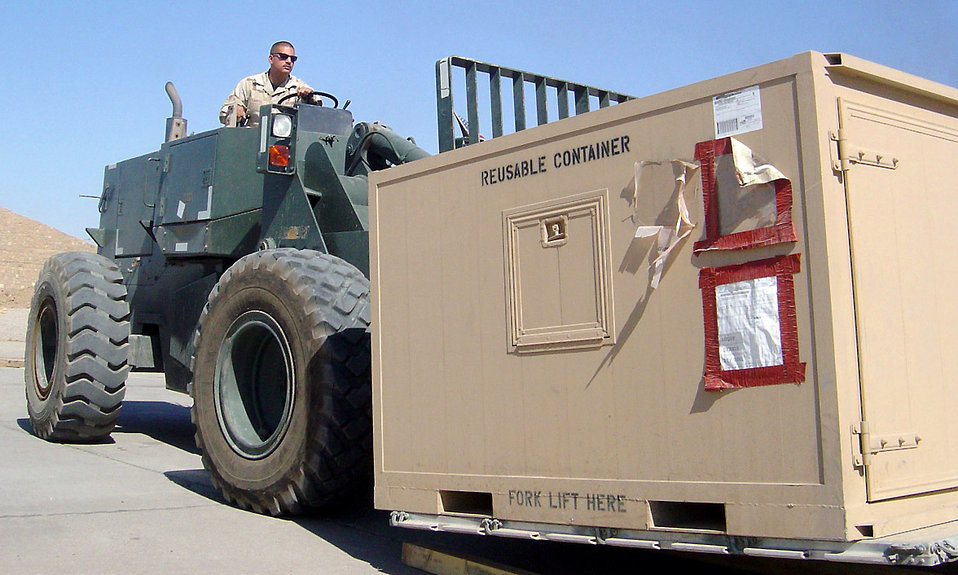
Demand of supply

KIRKUK AIR BASE, Iraq -- Senior Airman Cesar Campos offloads a storage container in the supply yard here. Campos is assigned to the 506th Expeditionary Logistics Readiness Squadron supporting Operation Iraqi Freedom.